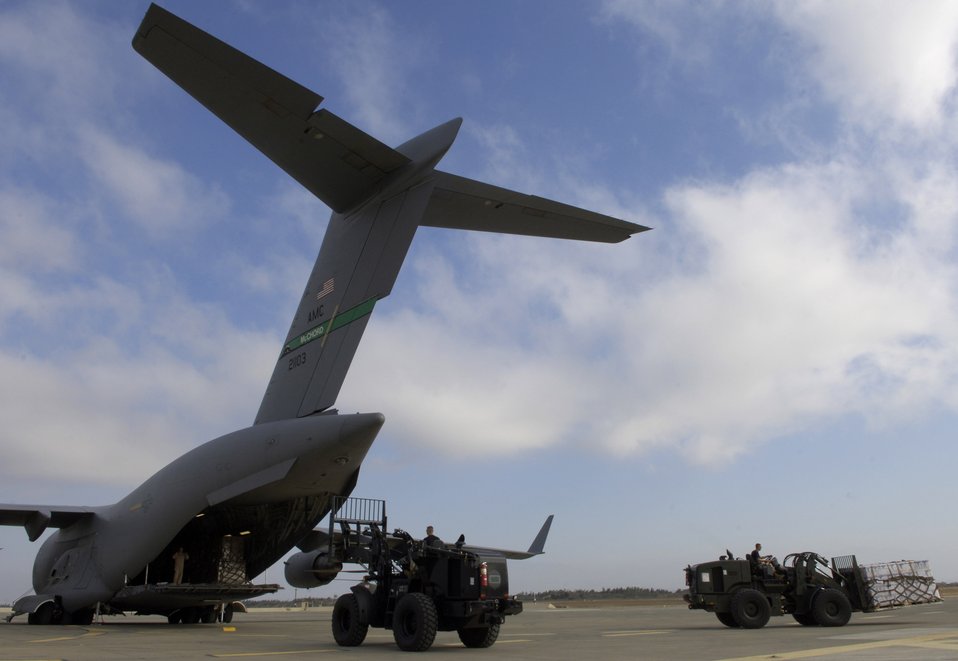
Supplies bound for Cyprus

Pallets are off-loaded by forklift from a C-17 Globemaster III in Cyprus on July 22. C-17 crews from the 816th Expeditionary Airlift Squadron are filling their cabins with pallets of supplies such as water, Meals, Ready to Eat and cots for the American citizens leaving Lebanon. This C-17 transported 17 pallets, about 64,000 pounds, of cargo to Cyprus on this mission.